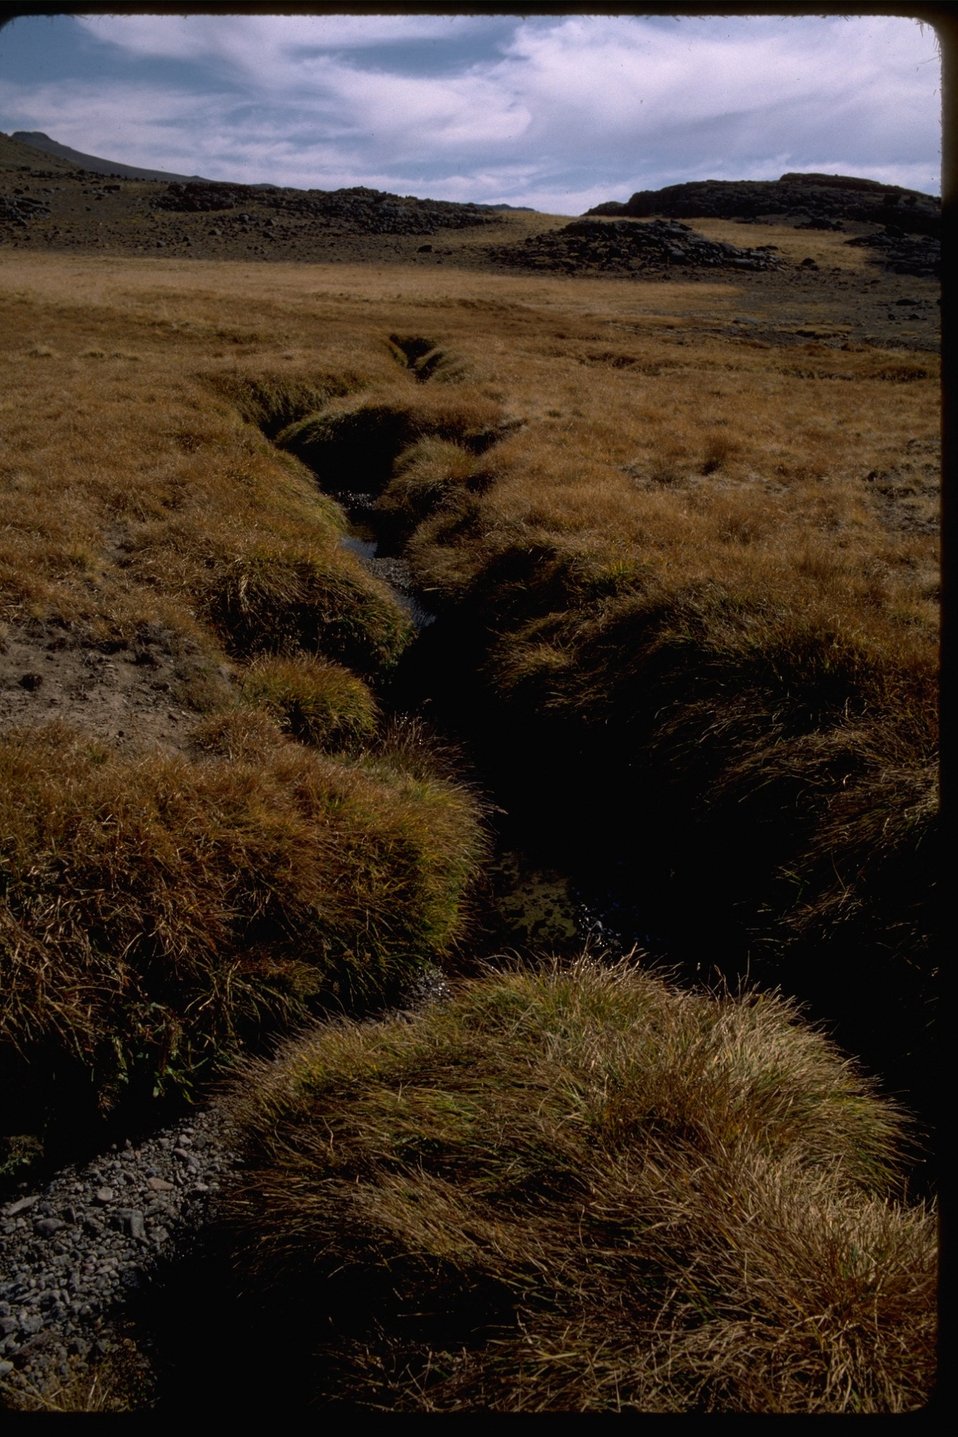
Fall colors of lush meadow vegetation in "Hanging Garden" in the Steens area.